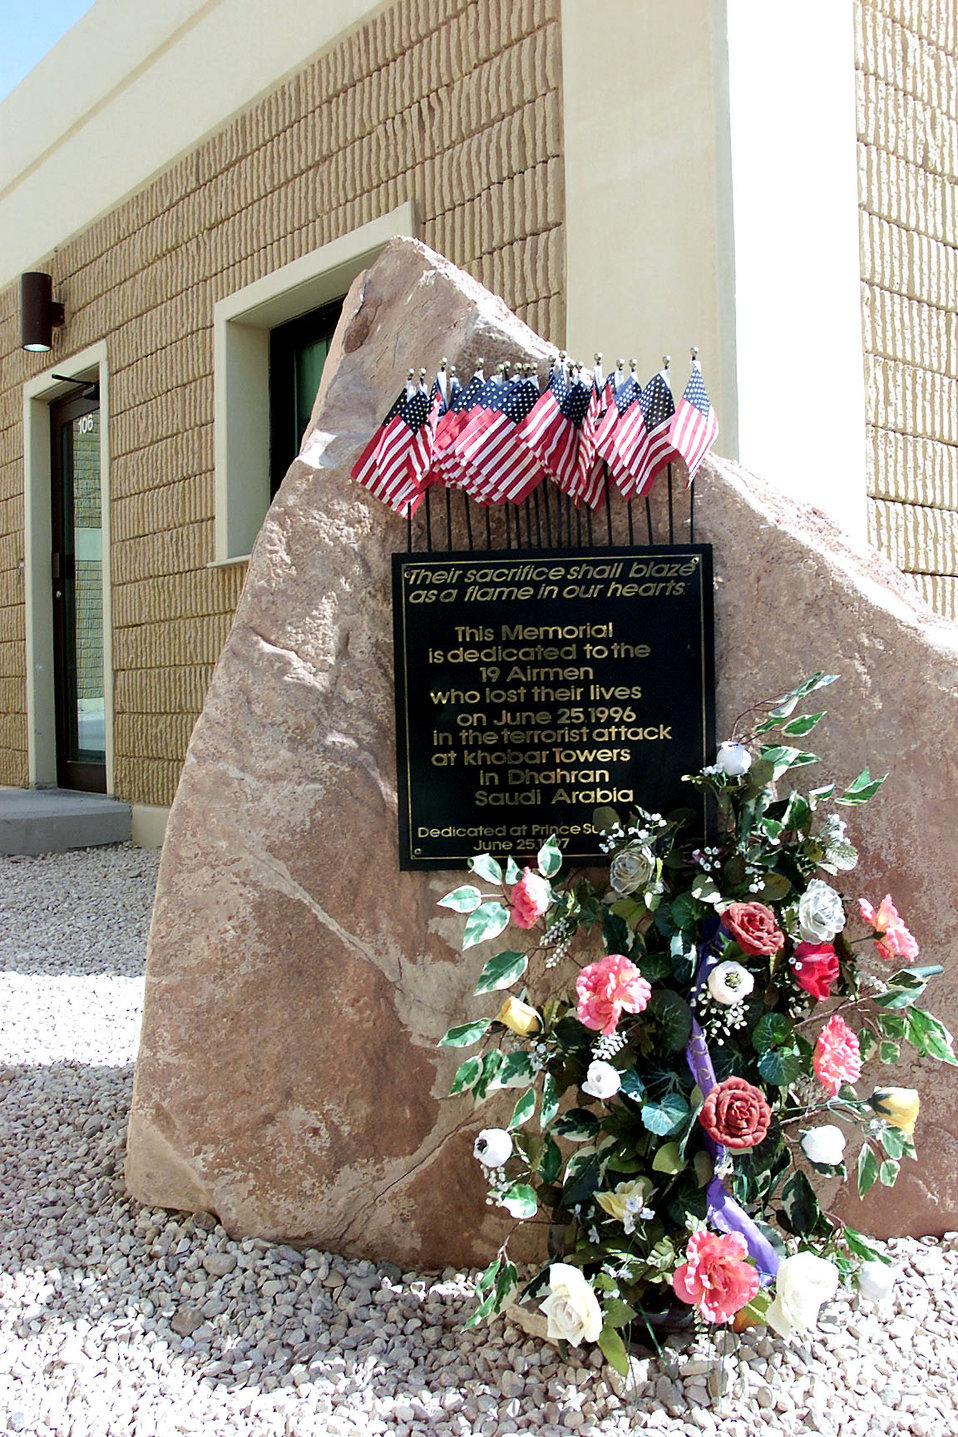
Airmen use lessons learned 10 years after Khobar Towers attack

A memorial was created at the former Prince Sultan Air Base, Saudi Arabia, to honor the 19 Airmen who lost their lives on June 25, 1996, in the terrorist attack at Khobar Towers in Dhahran, Saudi Arabia.